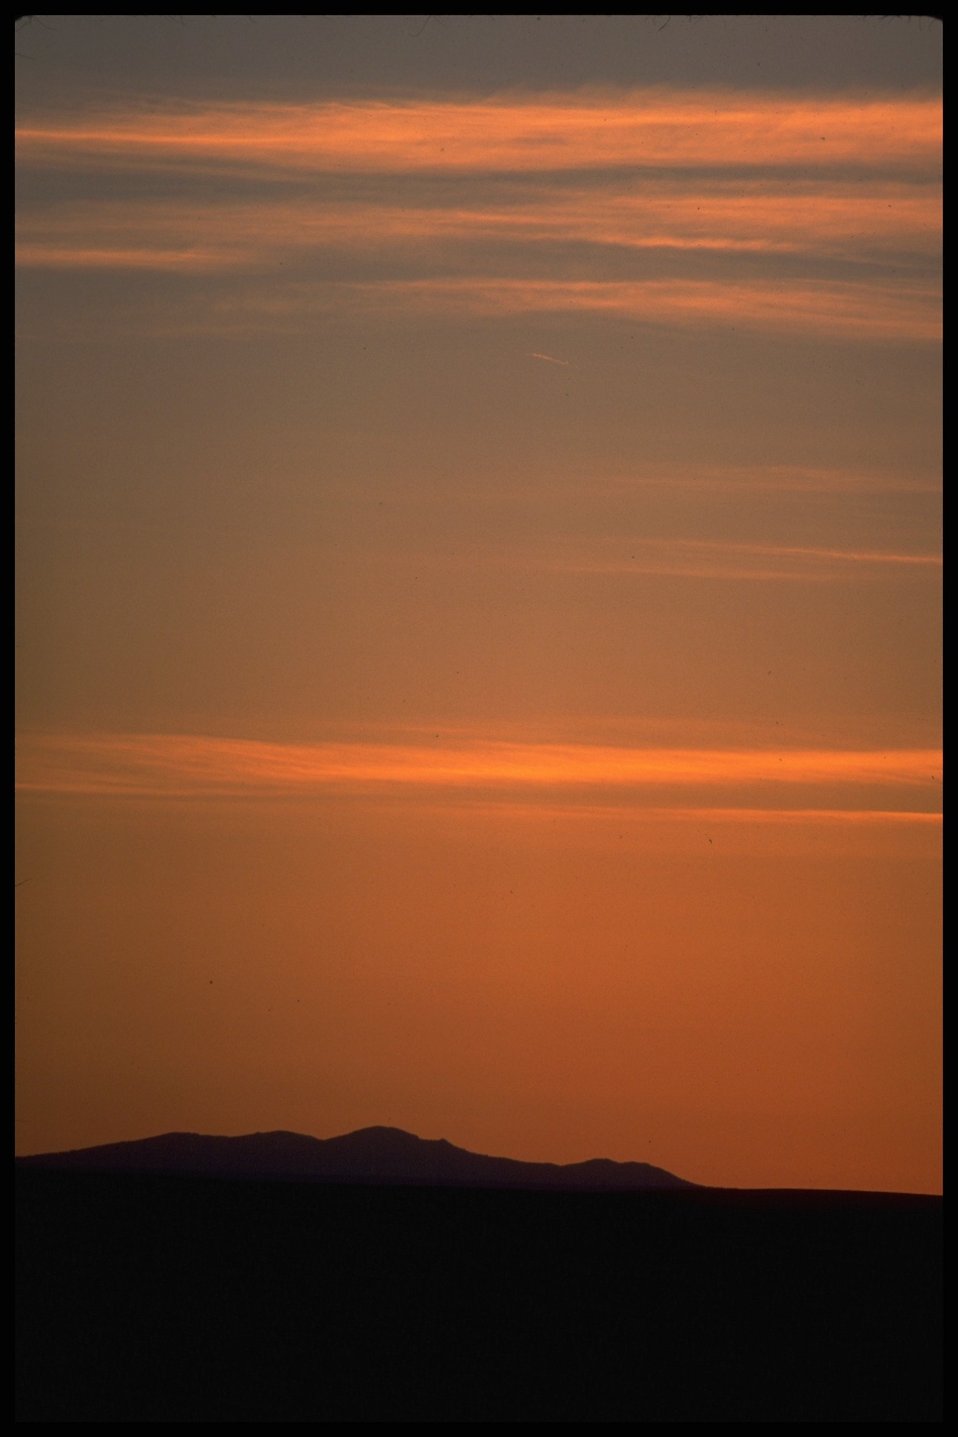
Sunset over Lakeview District.